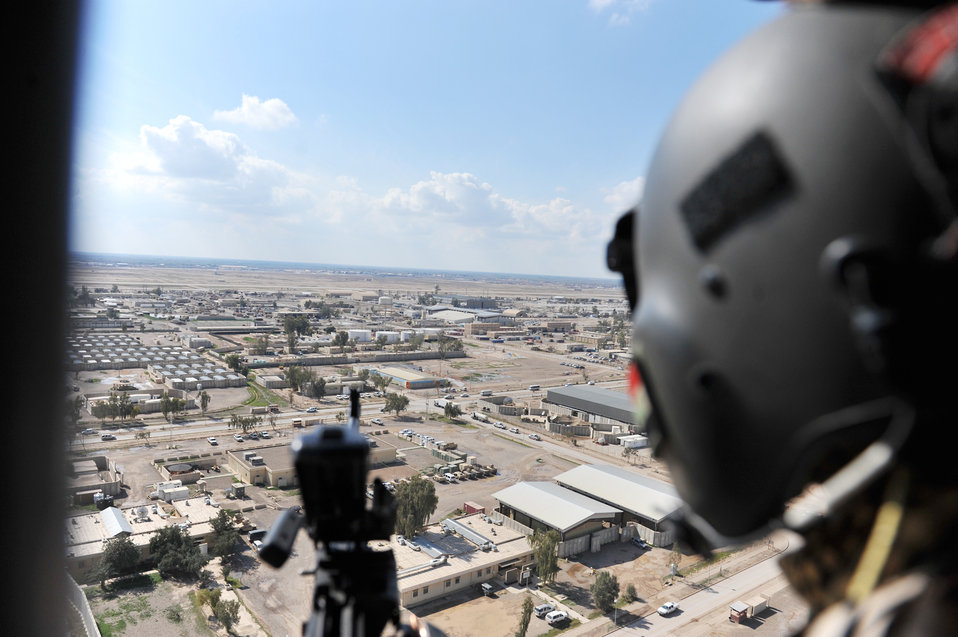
Airmen train Iraqi aerial gunners aim to protect helicopters, defend Iraq

Iraqi Mi-17 helicopter aerial gunner Athier Fiaz scans the area during takeoff March 2, 2010, at Camp Taji, Iraq.